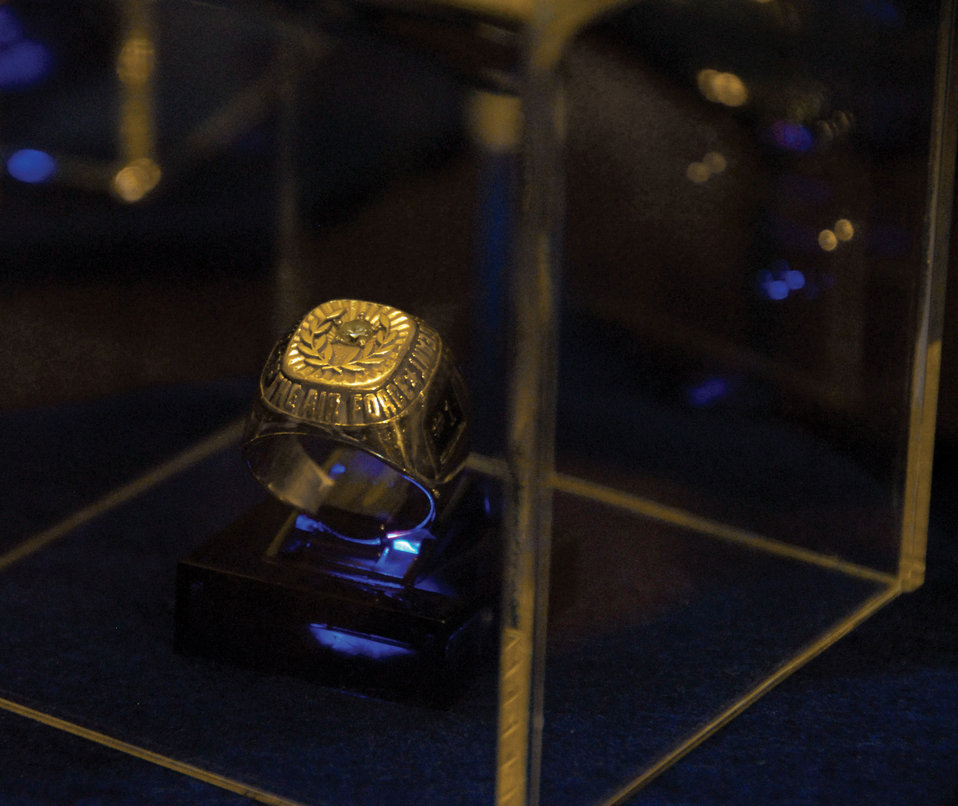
Enlisted Heritage Hall receives Airey CMSAF ring

Retired Chief Master Sgt. Dale Airey, son of the first Chief Master Sgt. of the Air Force Paul W. Airey, presented the Enlisted Heritage Hall his father's Chief Master Sgt. ring for display in a brief ceremony at Maxwell Air Force Base, Ala., April 30. In attendance were current Chief Master Sgt. of the Air Force Rodney McKinley, and former CMSAF's Robert Gaylor and Sam Parrish.